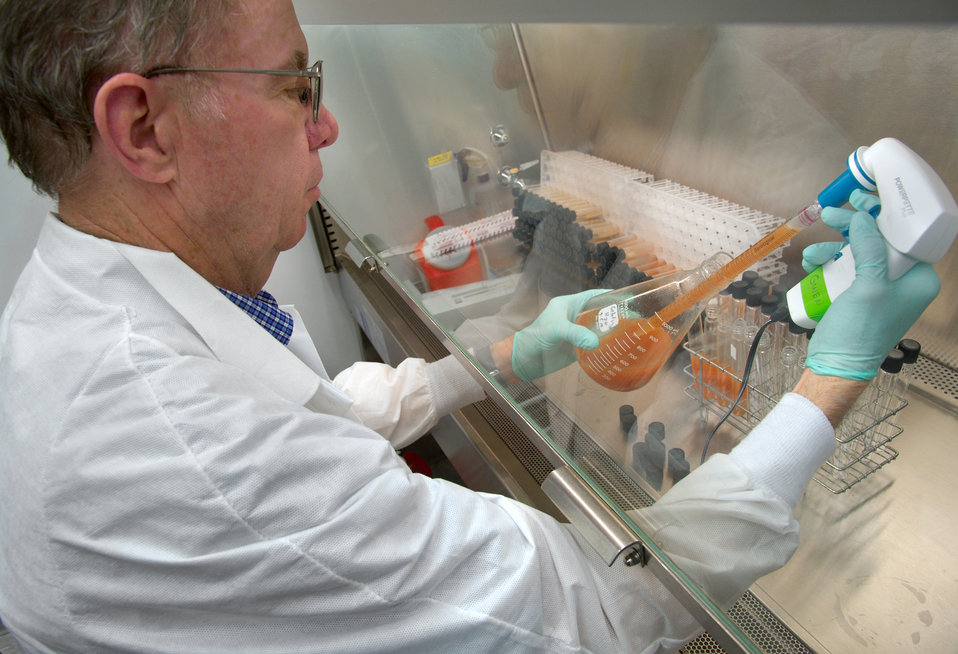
This image shows Centers for Disease Control and Prevention (CDC) scientist Steven Hurst preparing tubes for inoculation of material suspected of containing fungal organisms during the 2012 multistate fungal meningitis outbreak investigation.